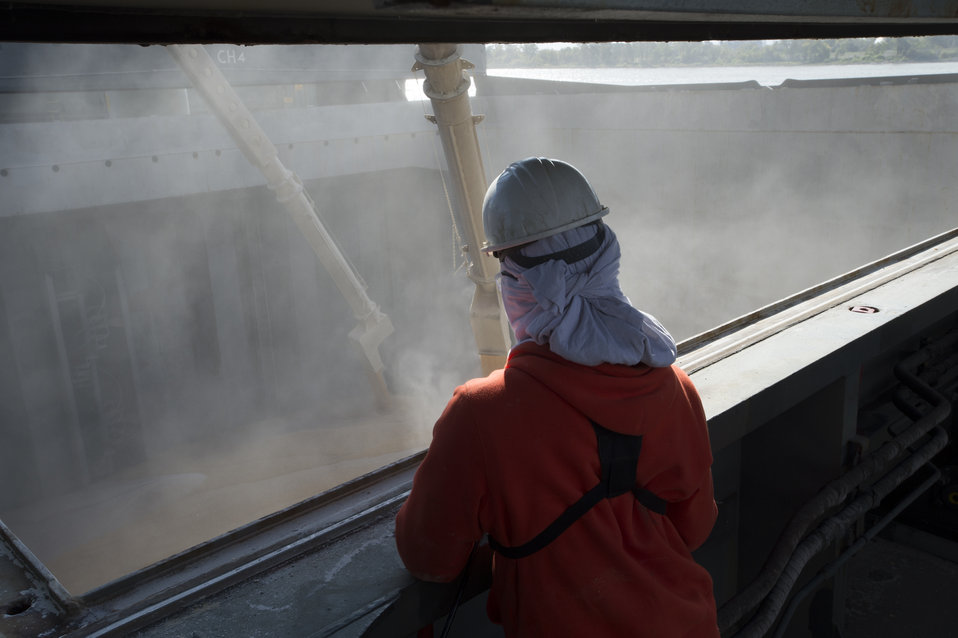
U.S. Department of Agriculture’s (USDA) Grain Inspection, Packers and Stockyards Administration (GIPSA) Federal Grain Inspection Service (FGIS) inspectors oversee the transfer of grain to storage facilities near the Port of New Orleans in New Orleans, LA on Tuesday, Nov. 19, 2013.